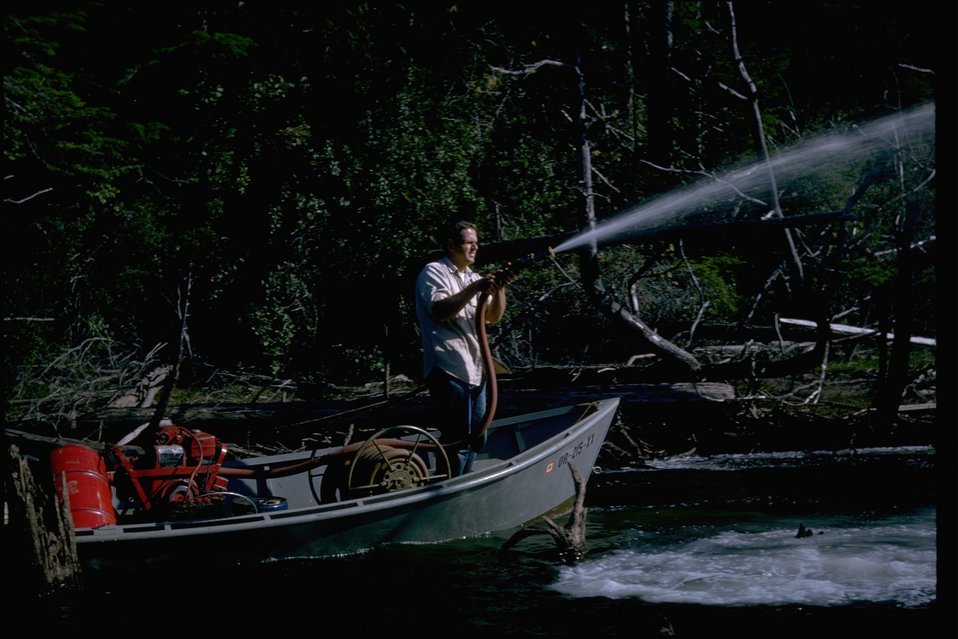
A man standing in a boat with a pump spraying water at something.